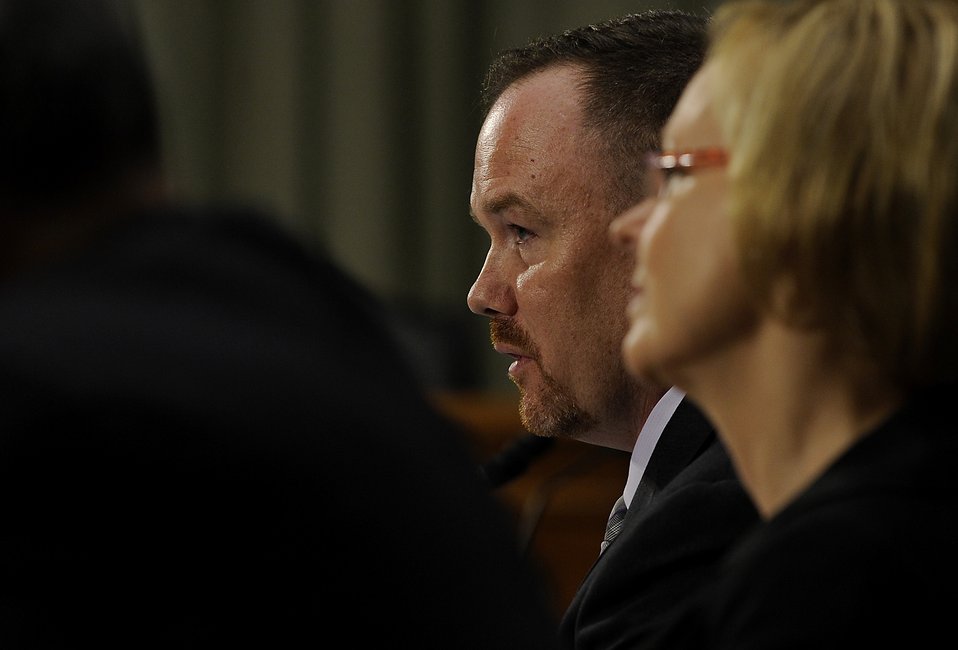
Air Force spouse testifies on military families with special needs

Jeremy Hilton testifies before the U.S. Senate Armed Services Subcommittee on Personnel in Washington, D.C., June 21, 2012. Hilton, who is married to Lt. Col. Renae Hilton, is an advocate for military families with special needs and is the Military Spouse of the Year for 2012.